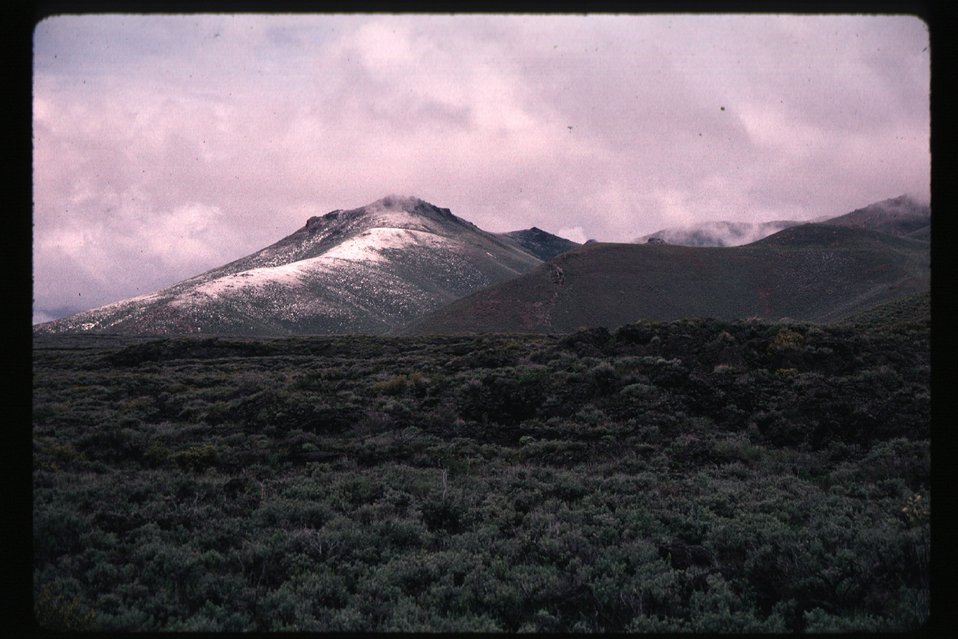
Rangelands USRD Upper Snake River District